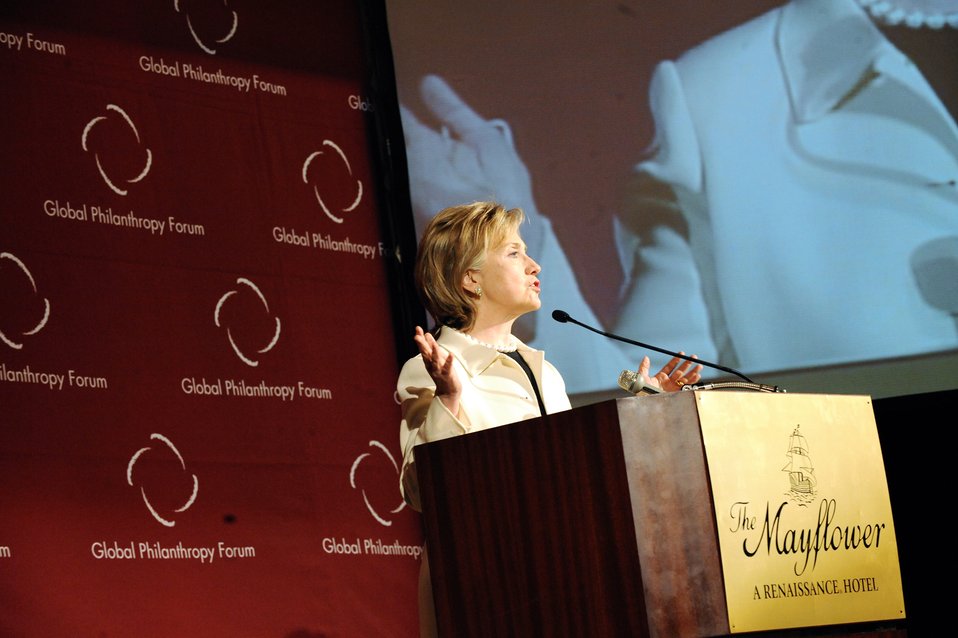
Global Philanthropy Forum Conference

U.S. Secretary of State Hillary Rodham Clinton provides remarks at the Global Philanthropy Forum Conference in Washinton, DC April 22, 2009.